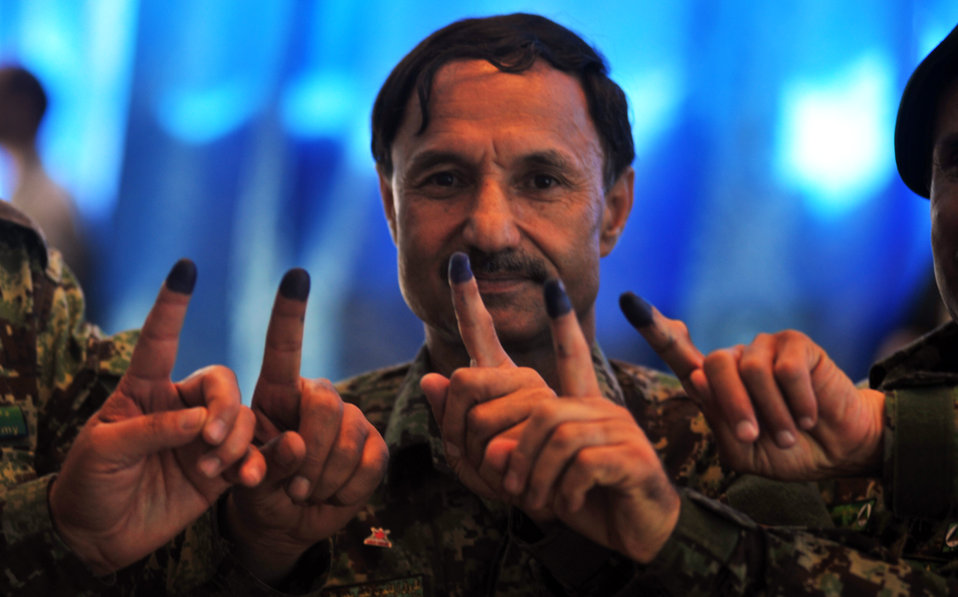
Afghan National Army (ANA) officers show colored fingers after casting ballots in Kabul.